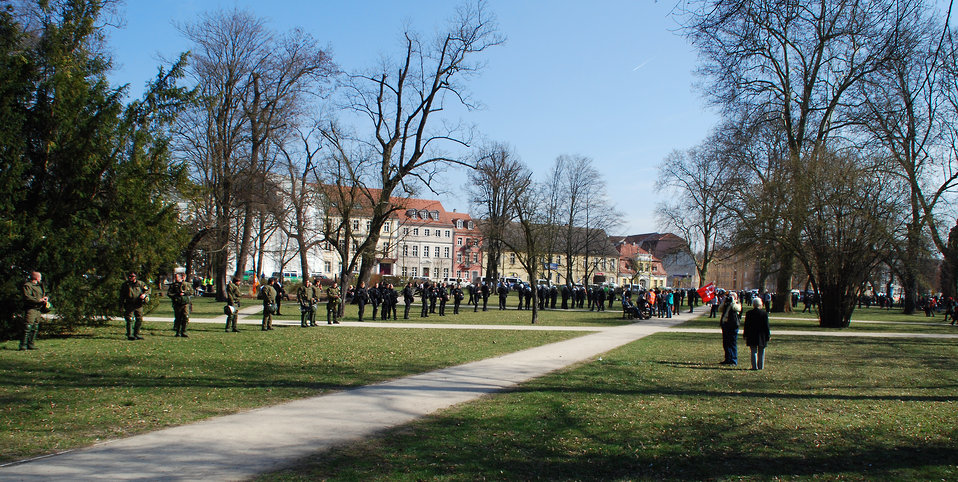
Proteste gegen den Nazi-Aufmarsch am 24.3.2012 in Frankfurt (Oder)